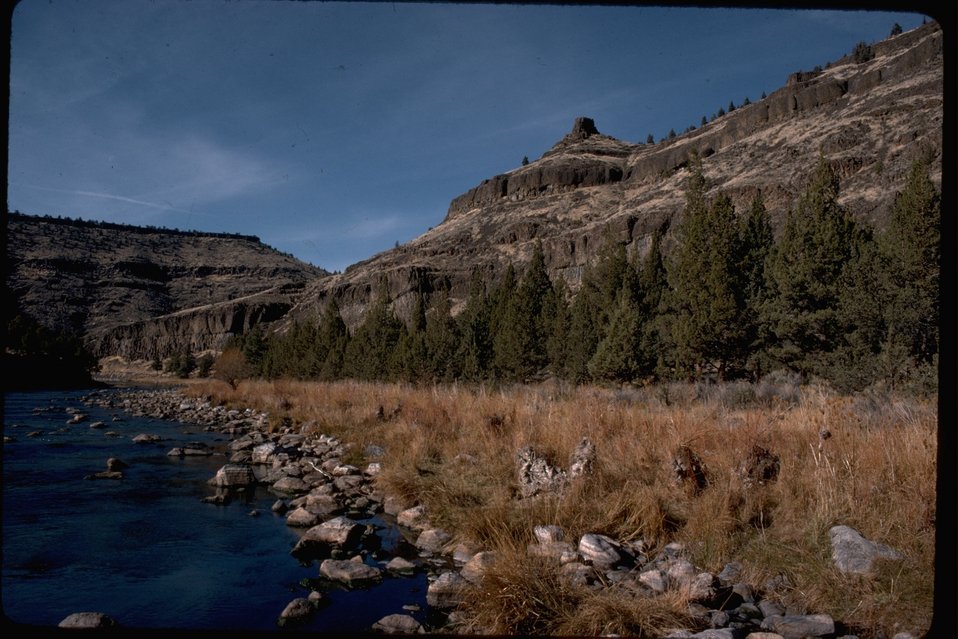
Rimrock and large cliff walls coming down to the Crooked River.